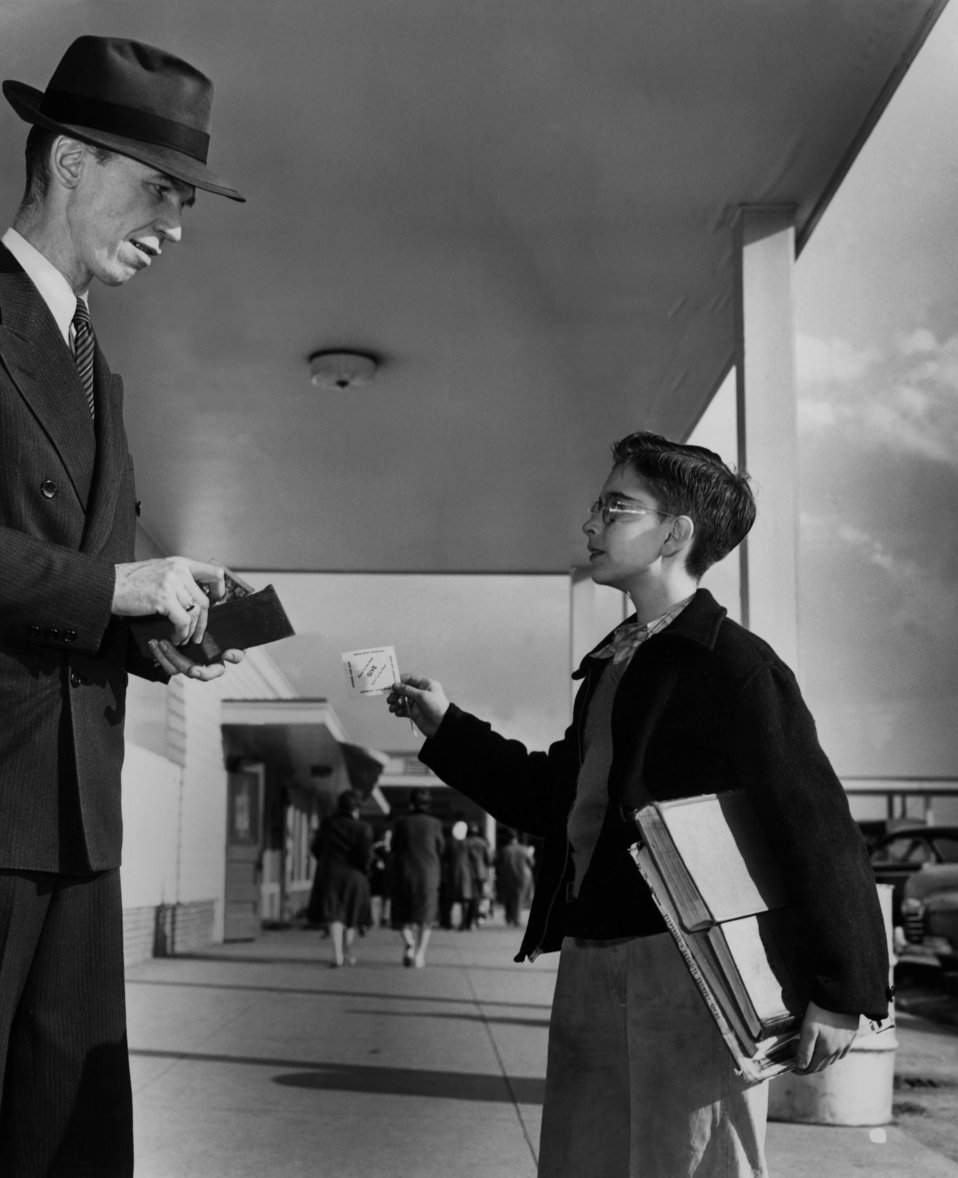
Jefferson High Band Fund Drive Oak Ridge

3368-2 DOE photo by Ed Westcott

Jefferson High Band Fund Drive Oak Ridge Tennessee 3-21-1947